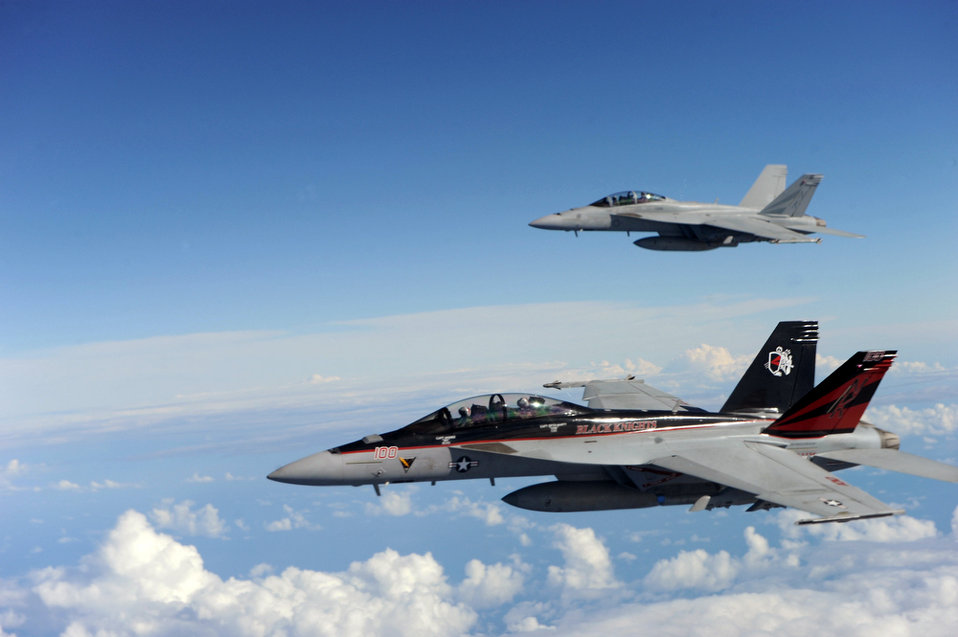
Refuelers keep aircraft flying during exercise

Two U.S. Navy F/A-18F Super Hornets fly off the wing of a KC-135 Stratotanker from the 507th Air Refueling Wing at Tinker Air Force Base, Okla., after being refueled over Hawaiian air space July 20, 2010, during the Rim of the Pacific exercise. RIMPAC, the world's largest maritime exercise, is a biennial event which stresses interoperability among the 14 nations participating in the exercise. The tanker is staging out of Joint Base Pearl Harbor-Hickam, Hawaii.